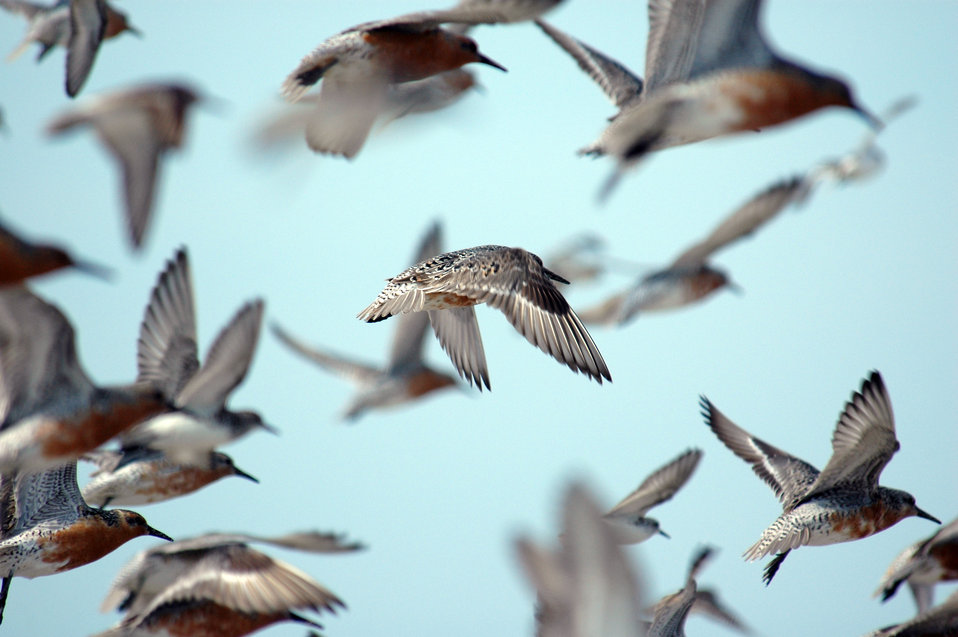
Red Knot in Flight

Mispillion Harbor, Delaware.